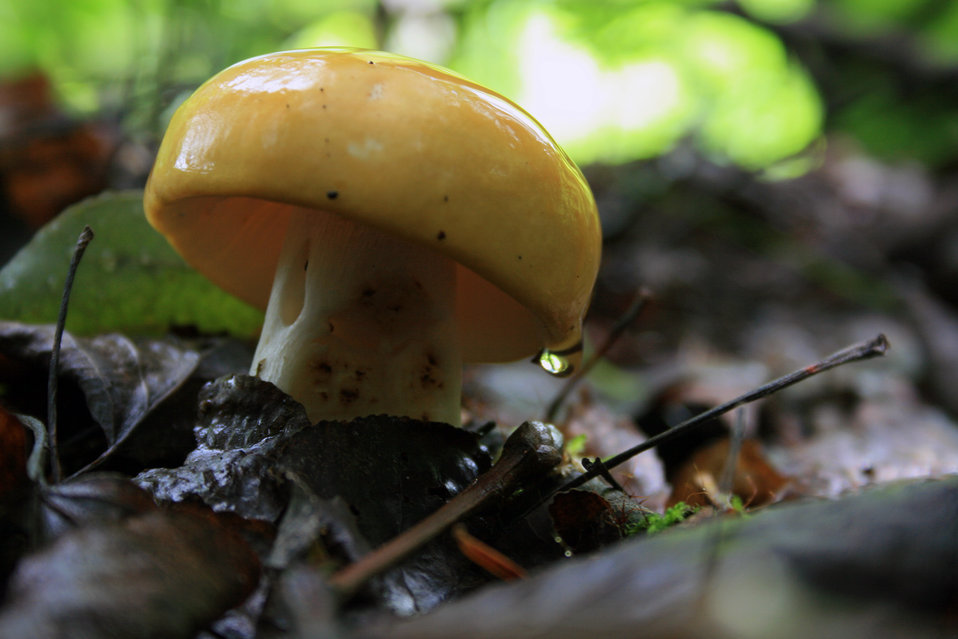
Mushroom